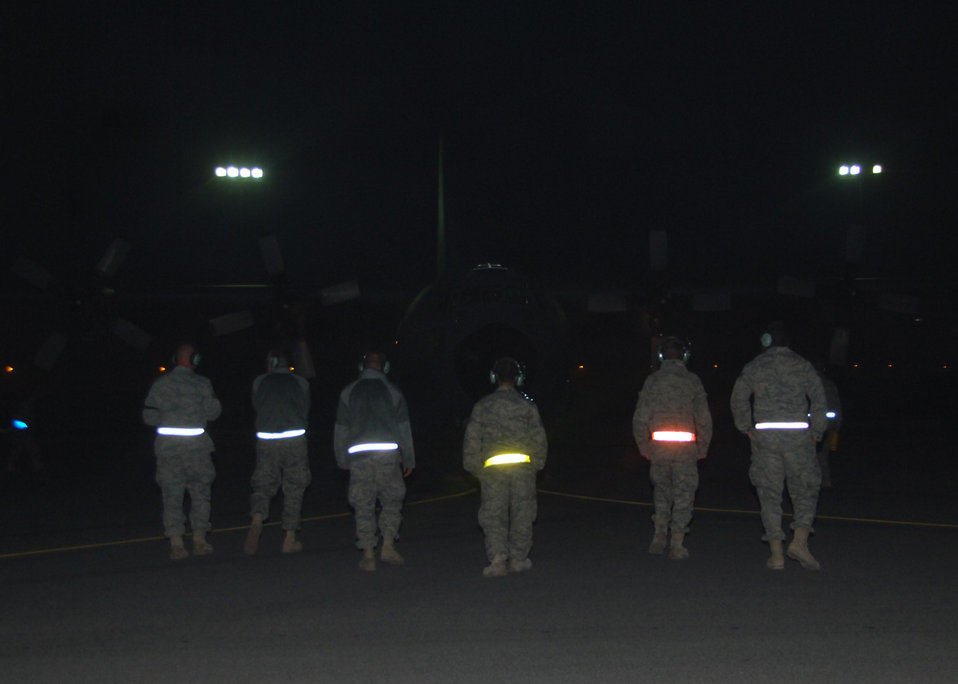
43rd EECS passes 20,000 combat hours

Maintainers from the 43rd Expeditionary Electronic Combat Squadron proceed to an EC-130 Compass Call aircraft at an air base in Southwest Asia to run system and maintenance checks Feb. 17 following a mission. The aircrew with the 43rd EECS had just completed the 20,000th combat flight hour for the unit, which has had five years of continuous deployment.